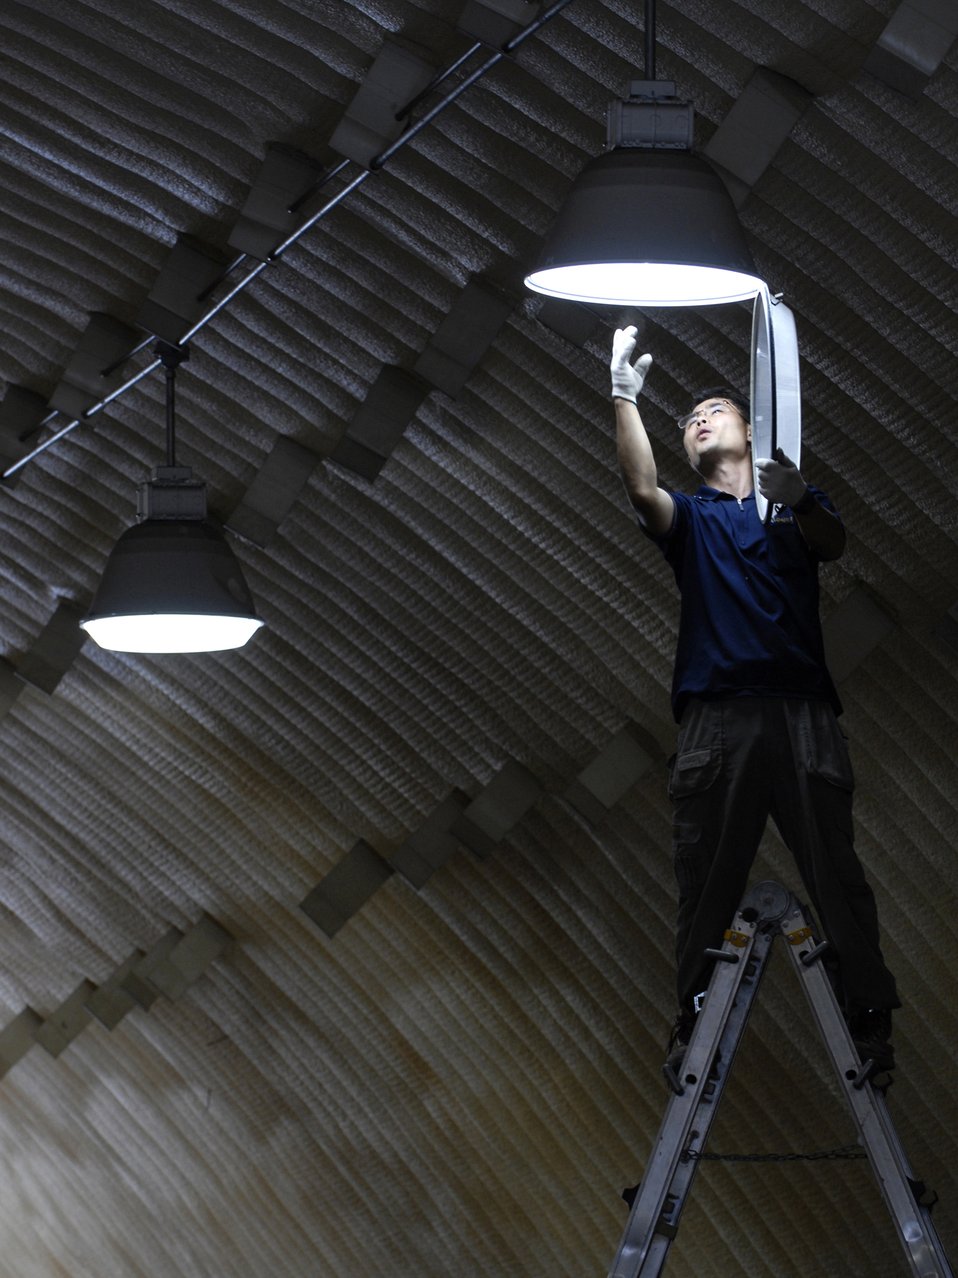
Preparing a city

Konho Yi replaces a metal halide bulb in one of the housing units at Rush Park July 28 at Osan Air Base, South Korea. The bulbs are being replaced in preparation for Ulchi Freedom Guardian, a joint bilateral exercise set to start in August. More than 550 military members will participate in the exercise. Mr. Yi is a contract electrician.